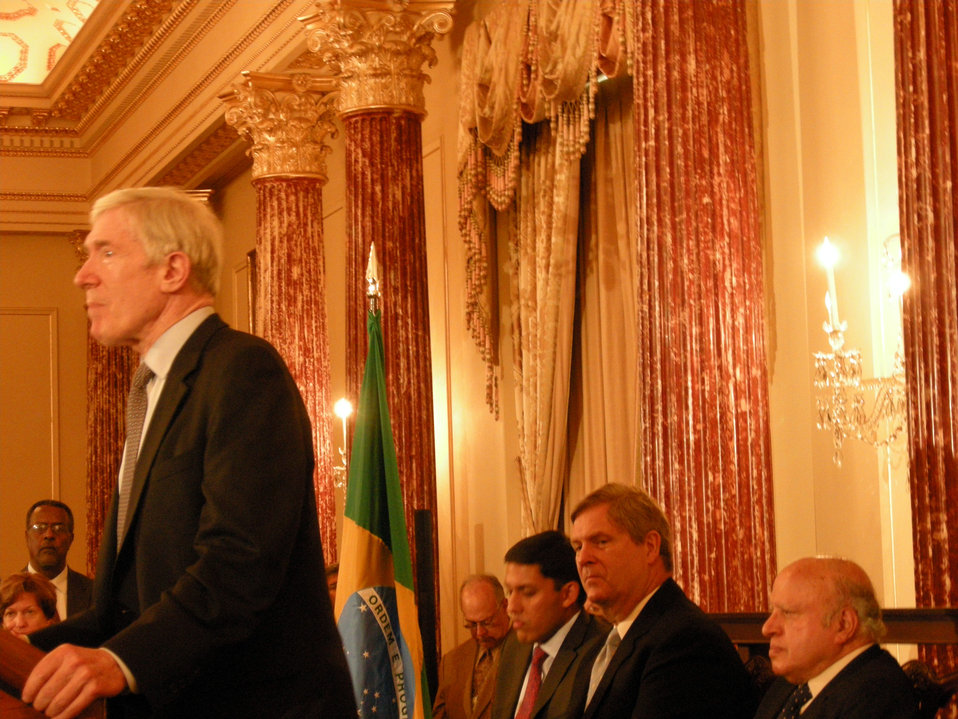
Under Secretary Hormats Honors World Food Prize Recipients

Under Secretary of State for Economic, Energy and Agricultural Affairs Robert Hormats honors the former President of Ghana, John Agyekum Kufuor, and the former President of Brazil, Luiz Inacio Lula da Silva, as recipients of the 2011 World Food Prize, at the U.S. Department of State in Washington, D.C., on June 21, 2011.